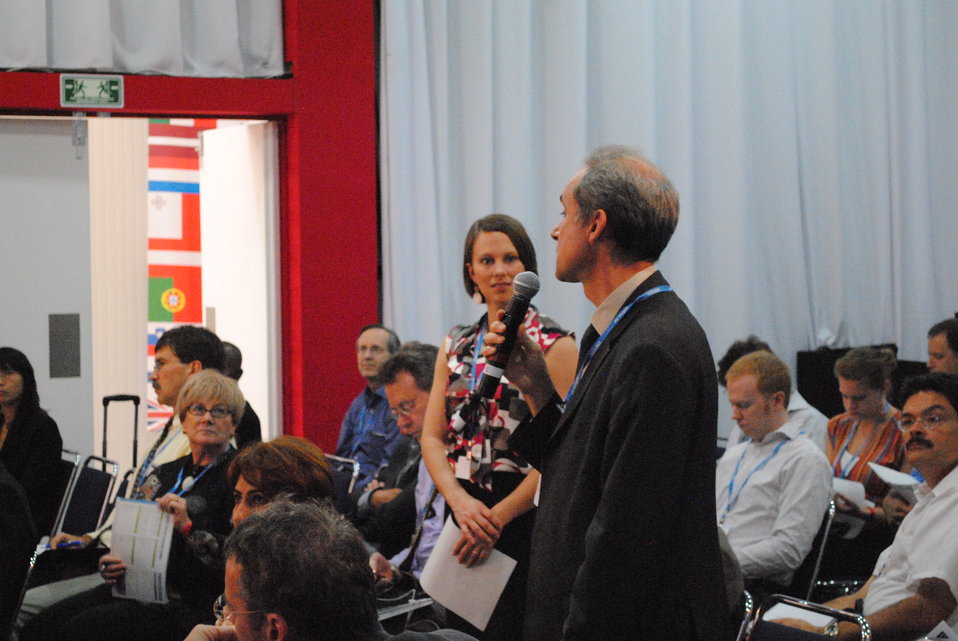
An Audience Member Asks a Question

A member of the audience asks a question during the side event, Enhancing Capacity for Low Emission Development Strategies, at the U.S. Center at COP-16 in Cancun, Mexico, on December 2, 2010. USAID's Ashley Allen is standing to the right of the individual asking the question.